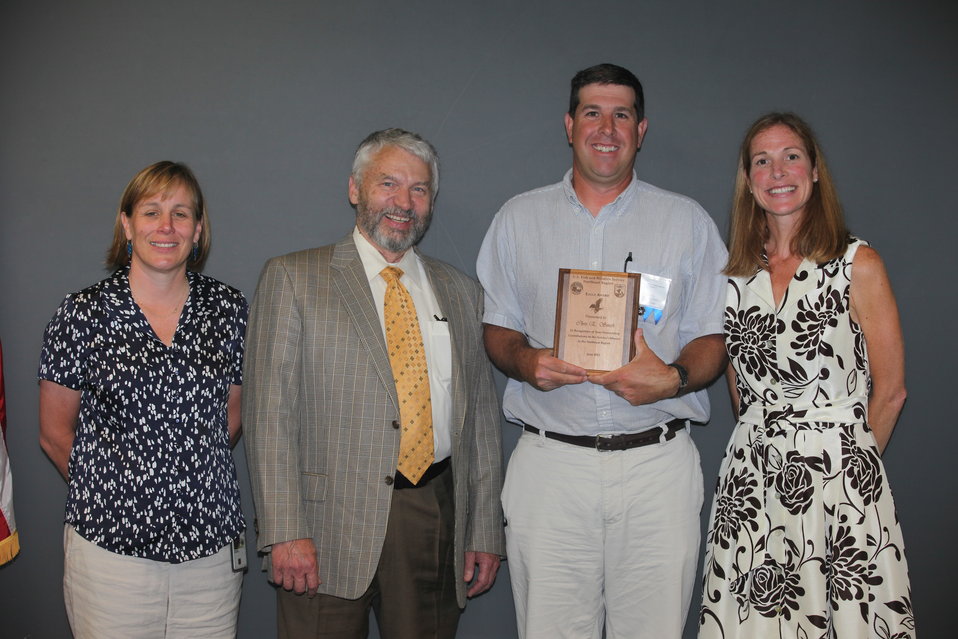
Chris Smith of the Lake Champlain Fish and Wildlife Resources Office recieved the Eagle Award.
From left to right: Deputy Regional Director Deb Rocque, Deputy Director Rowan Gould, Chris Smith, and Regional Director Wendi Weber